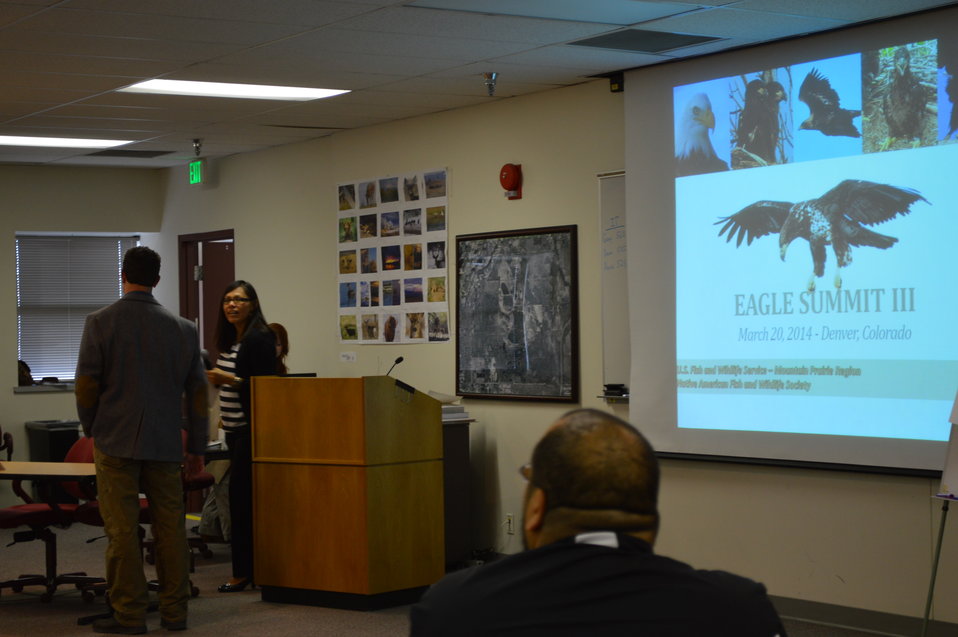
Eagle Summit III

Setting up at the Eagle Summit III in Denver, Colorado on March 20, 2014 at the Rocky Mountain Arsenal National Wildlife Refuge.